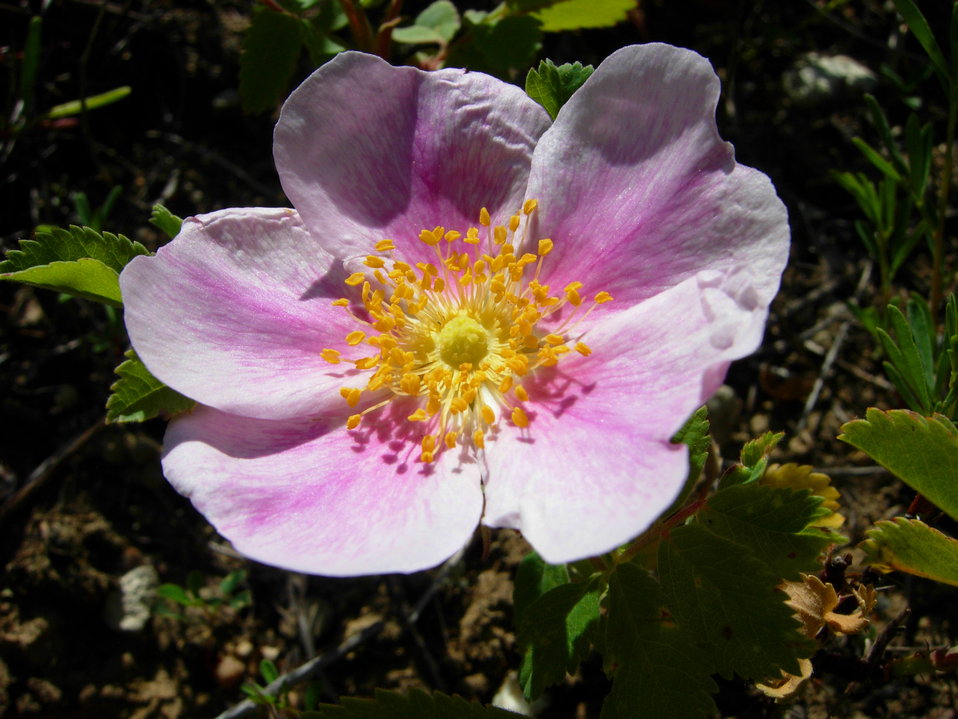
Wild prairie rose on Upper Souris National Wildlife Refuge in North Dakota. The wild prairie rose is the state flower of North Dakota.